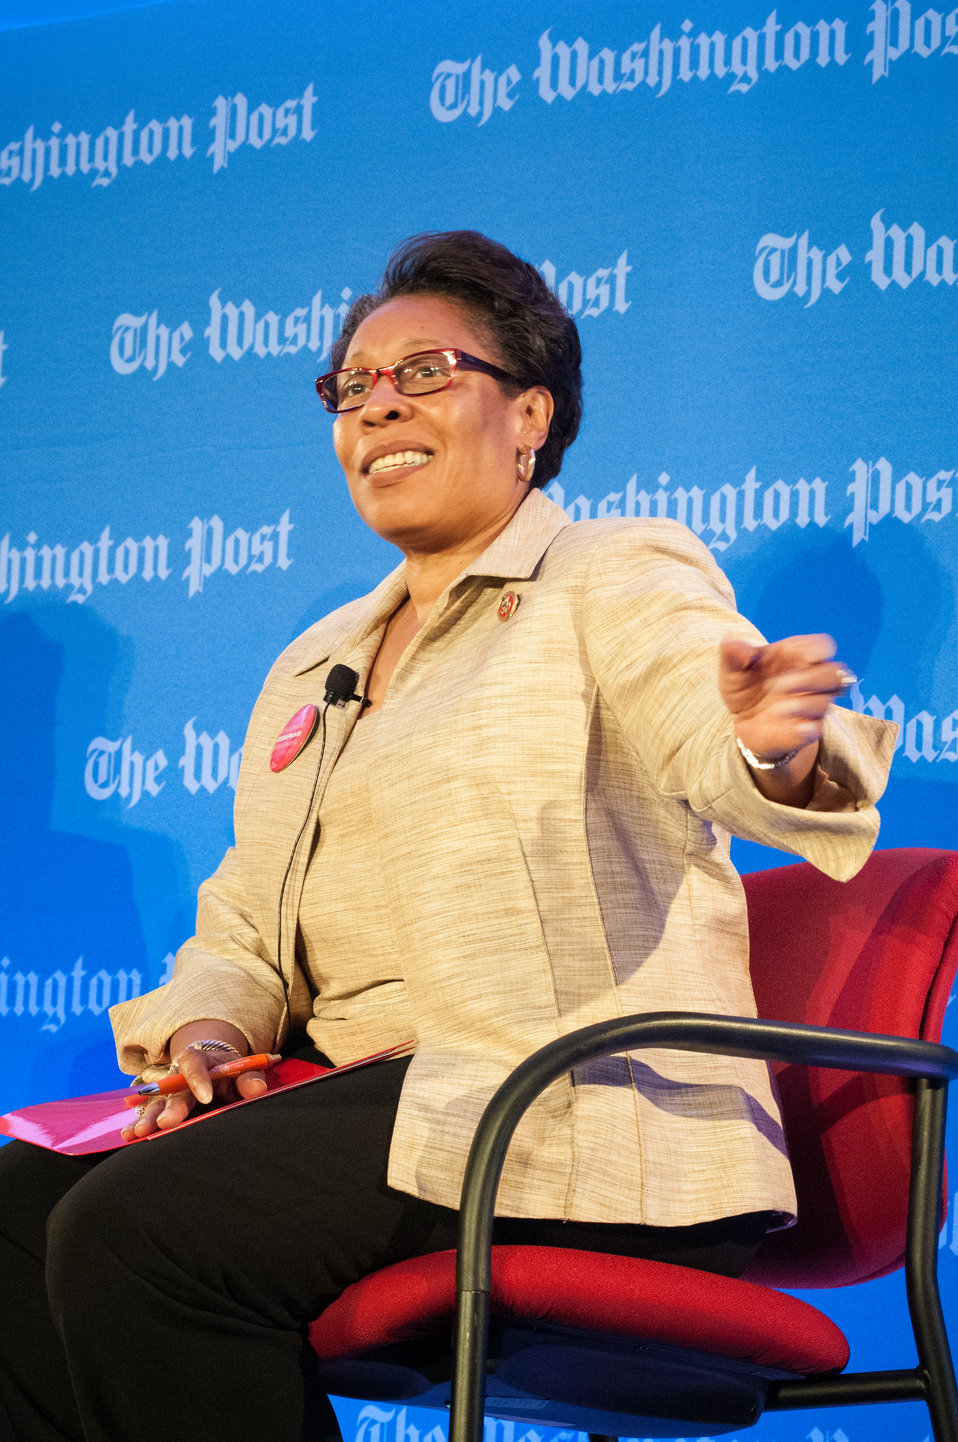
U.S. House of Representatives Committee on Agriculture member Congresswoman and an anti-hunger advocate Marcia Fudge (OH) along with Agriculture Secretary Tom Vilsack and leading agricultural and nutrition experts discuss expanding healthy, sustainable food systems during the annual live forum, “Future of Food: Building a Sustainable Food System 2013,” sponsored by the Washington Post in Washington, D.C. on Wednesday, May 22, 2013. The discussion included public-private partnerships, the market’s role in nutrition and the future of agricultural innovation.